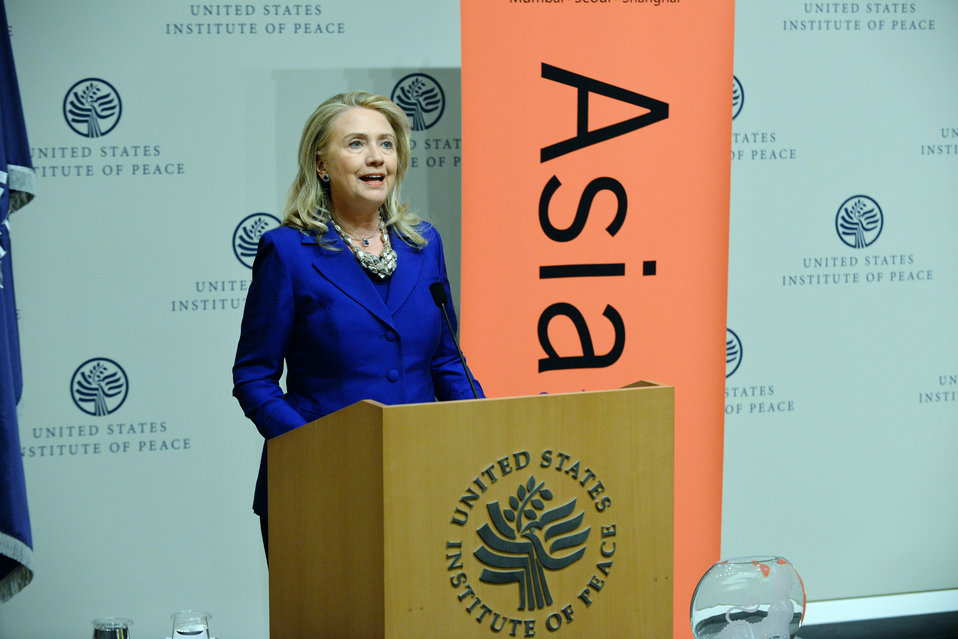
Secretary Clinton Honors Daw Aung San Suu Kyi

U.S. Secretary of State Hillary Rodham Clinton delivers remarks at the U.S. Institute of Peace/ Asia Society’s event honoring Daw Aung San Suu Kyi, Chair of the National League for Democracy and Member of Parliament from Kawmhu Constituency, at the U.S. Institute of Peace in Washington, D.C., September 18, 2012.